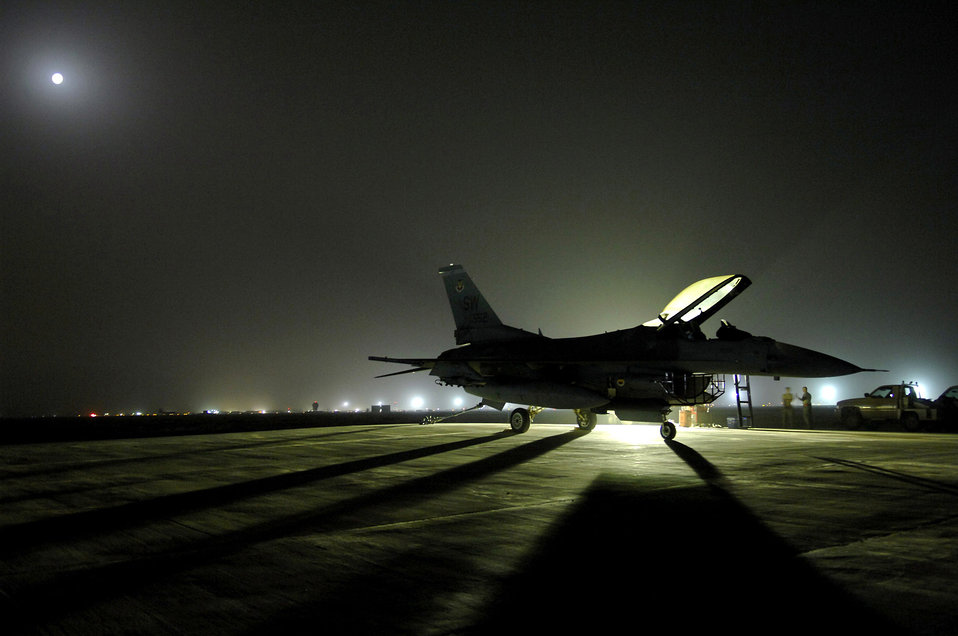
Getting a check up

An F-16 Fighting Falcon sits on a trim pad July 16 at Joint Base Balad, Iraq. Engine mechanics and crew chiefs were conducting tests to ensure all systems were fully functional before putting the fighter back into operational use.